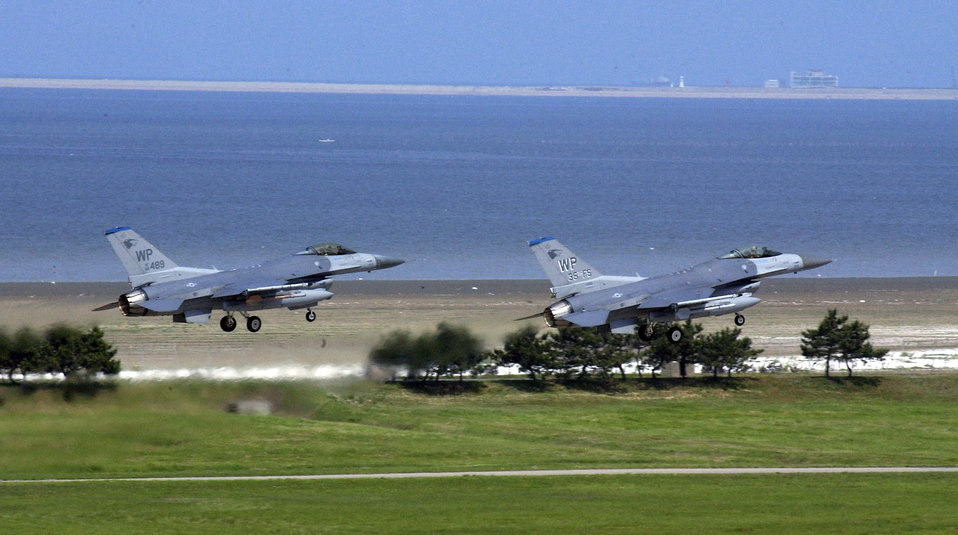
Kunsan, South Korea team up for joint training exercise

F-16 Fighting Falcons from the 8th Fighter Wing and South Korean air force's 111th Fighter wing take off for a joint training exercise June 8 from Kunsan Air Base. South Korea. This is the first time since the South Korean 111th Fighter Squadron moved to Kunsan AB that the South Korean and American units have briefed, flown and debriefed together on a dedicated mission.